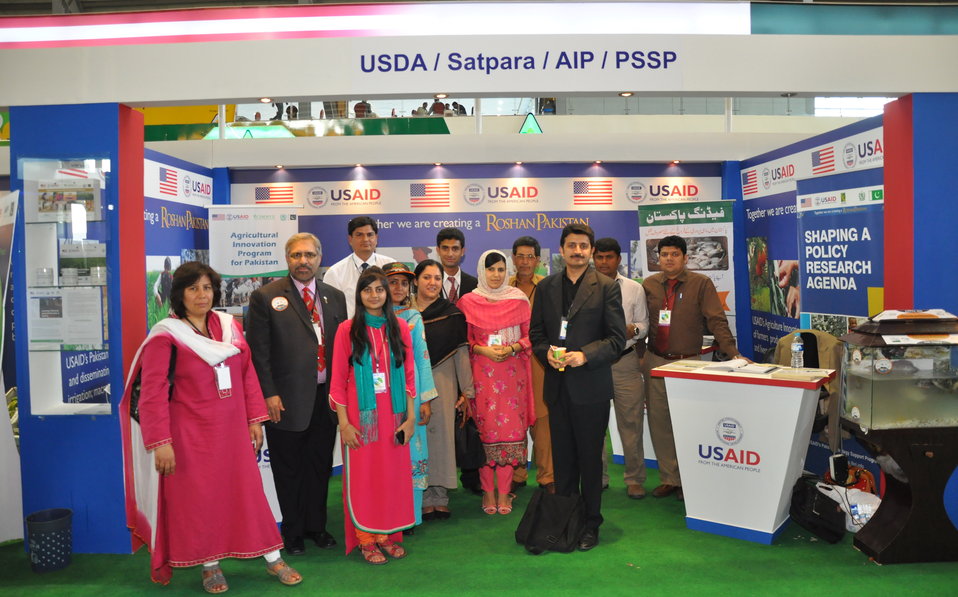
Booth of USDA/Satpara/AIP/PSSP

Core Group of the combined booth of USDA and other partners
Photo courtesy: ASA/WISHH/PK (FEEDing Pakistan)